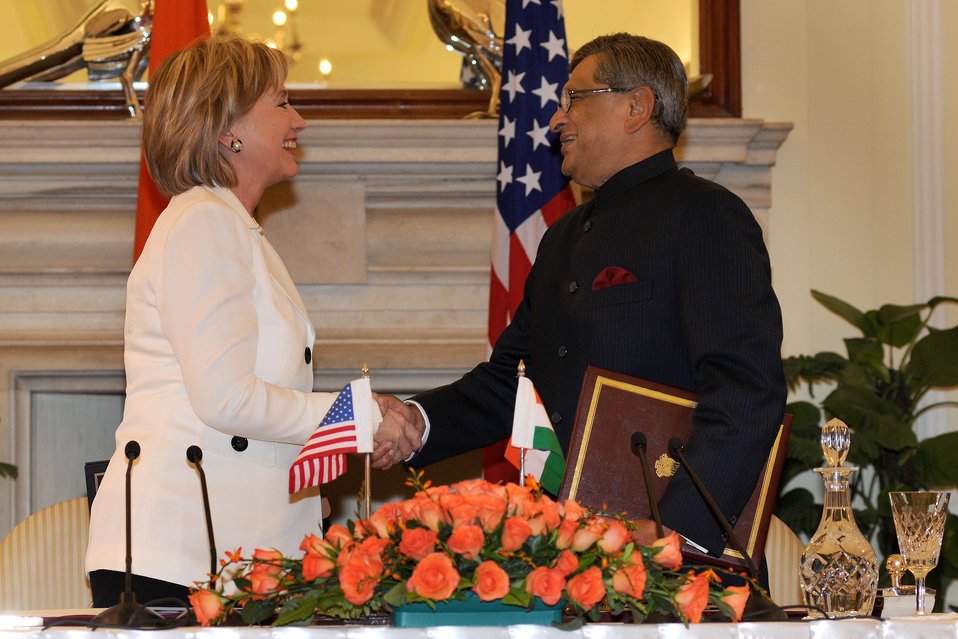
U.S., India Sign Bilateral Science and Technology Endowment Agreement

U.S. Secretary of State Hillary Rodham Clinton and Indian Minister of External Affairs S.M. Krishna shake hands following the signing of a U.S.-India bilateral science and technology endowment agreement in New Delhi, India July 20, 2009.